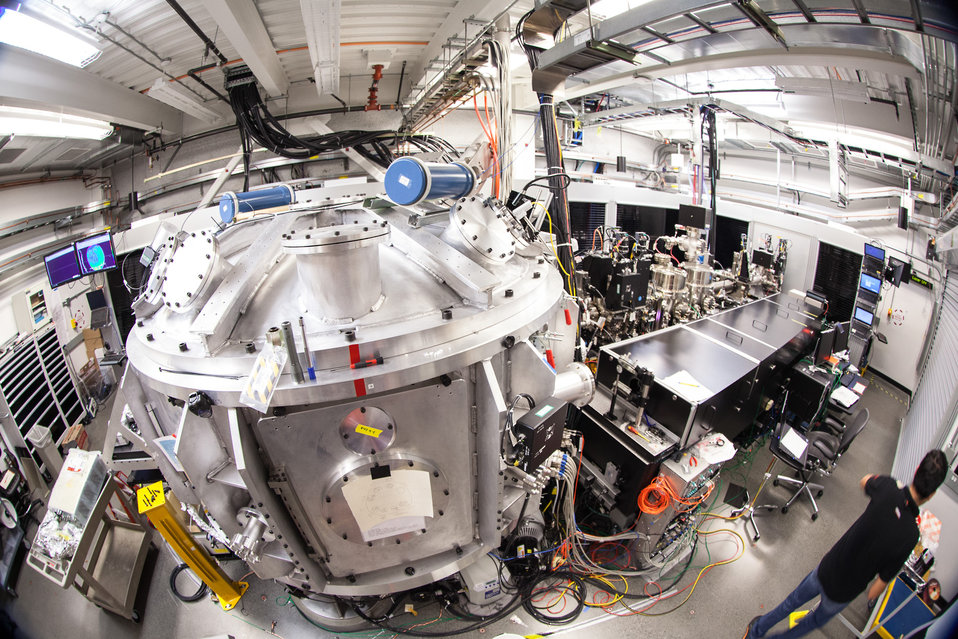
Shown is the Matter in Extreme Conditions (MEC) hutch of SLAC's LCLS Far Experiment Hall.

The (MEC) Matter in Extreme Conditions instrument at SLAC gives scientists the tools to investigate the extremely hot, dense matter at the centers of stars and giant planets. These experiments could help researchers design new materials with enhanced properties and recreate the nuclear fusion process that powers the sun.